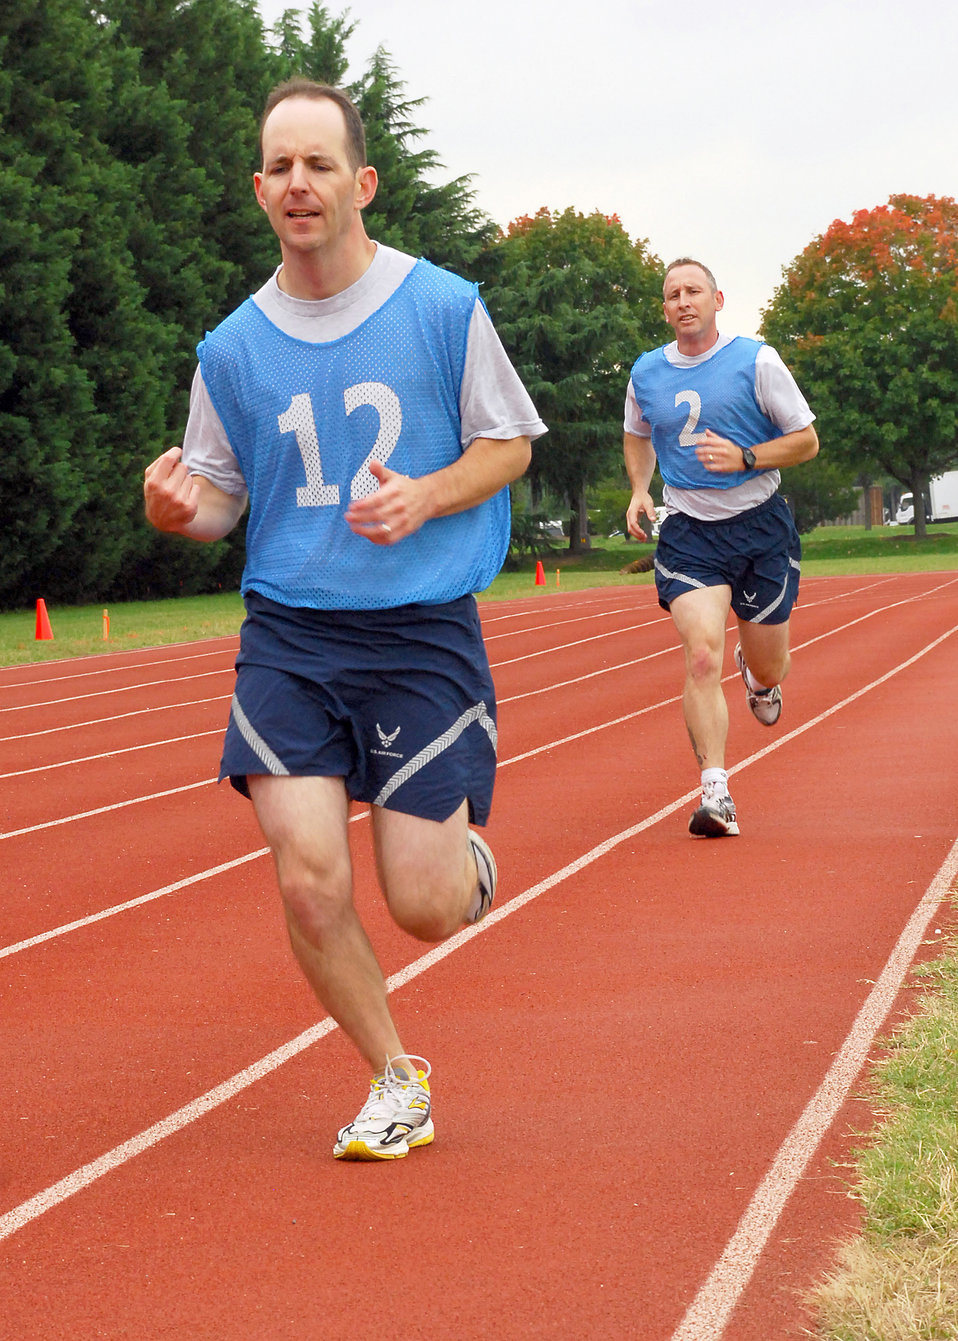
Airmen embracing fitness culture

Air Force members sprint toward the finish line to complete their 1.5 mile run of the Air Force Fitness Test at Joint Base Anacostia-Bolling Oct 19, 2010. The Air Force uses an overall composite fitness score and minimum scores per component based on aerobic fitness, body composition and muscular fitness components to determine overall fitness.